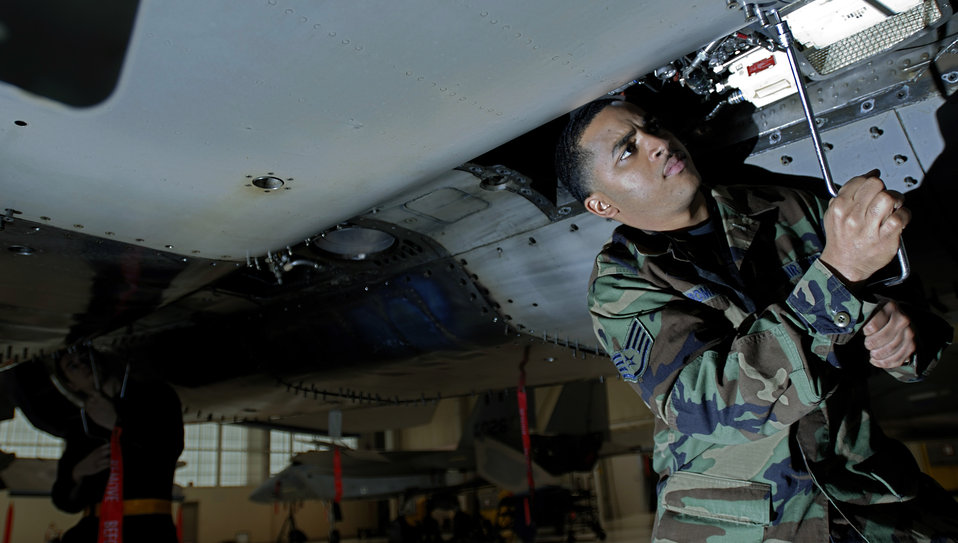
F-15 preventive maintenance

Staff Sgt. Sergio Romano tightens the rivets on an F-15 Eagle Tuesday, March 14, 2006, at Langley Air Force Base, Va. Sergeant Romano is with the 71st Aircraft Maintenance Unit.